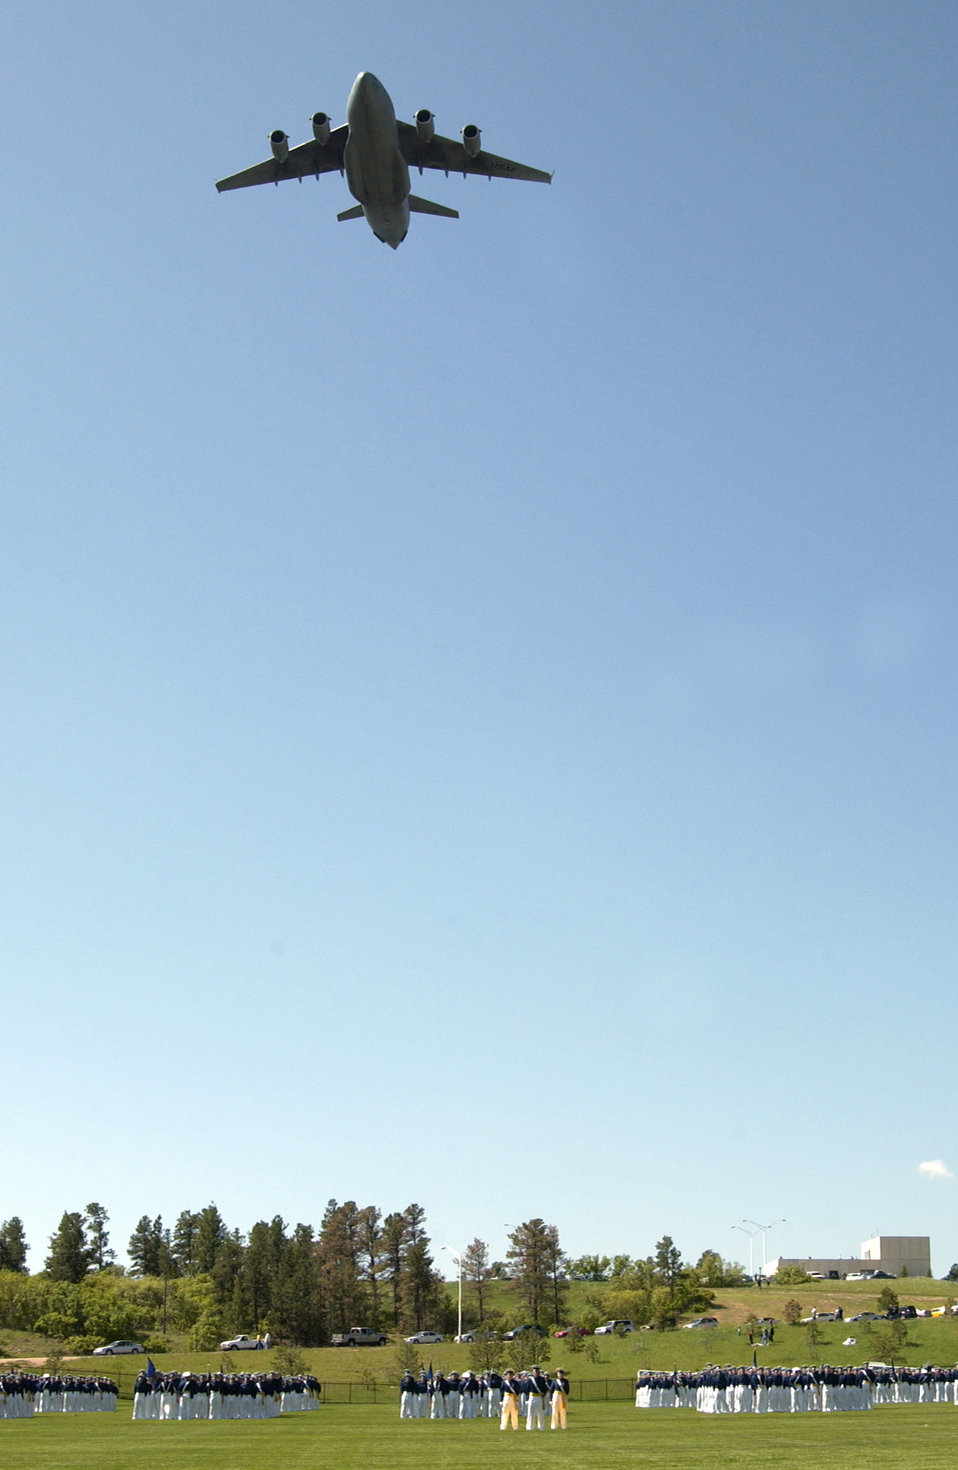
Parade preps Class of 2007 for graduation

A C-17 Globemaster III flies over the parade field during the 2007 Graduation Parade May 29 at the U.S. Air Force Academy in Colorado. The graduation for the U.S. Air Force Academy's Class of 2007 will be held at 10 a.m. May 30 at Falcon Stadium. Secretary of Defense Dr. Robert M. Gates will be the guest speaker. Each cadet graduates with a bachelor of science degree and a commission as a second lieutenant in the Air Force.